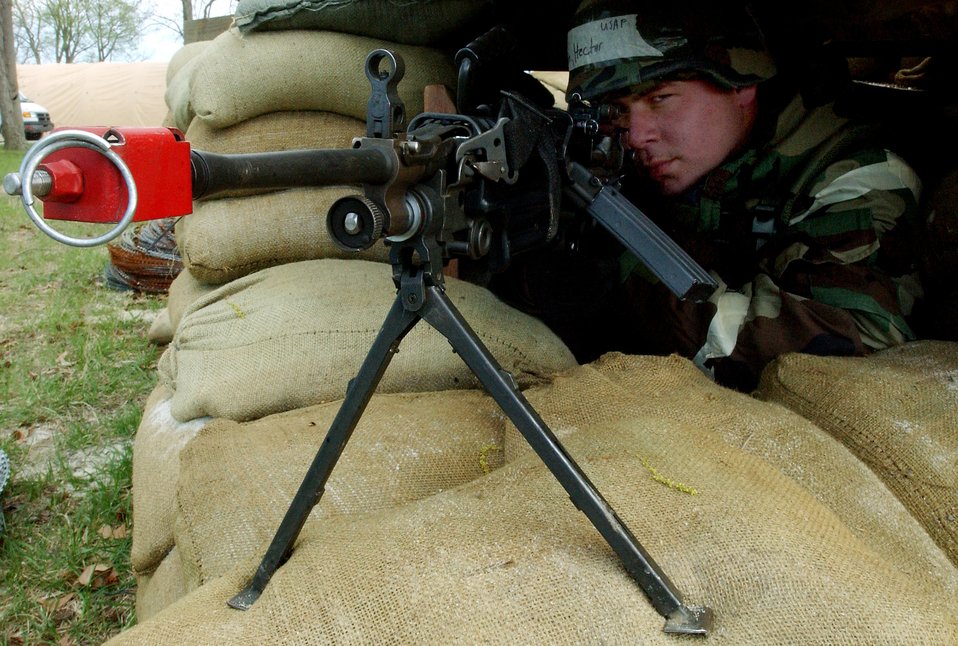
Bunker down

LANGLEY AIR FORCE BASE, Va. -- Airman 1st Class Hector Barreto mans a bunker, armed with an M-249 squad assault weapon during a phase 1 and 2 operation readiness exercise here April 13. Airman Barreto is a security forces Airmen with the 1st Security Forces Squadron.